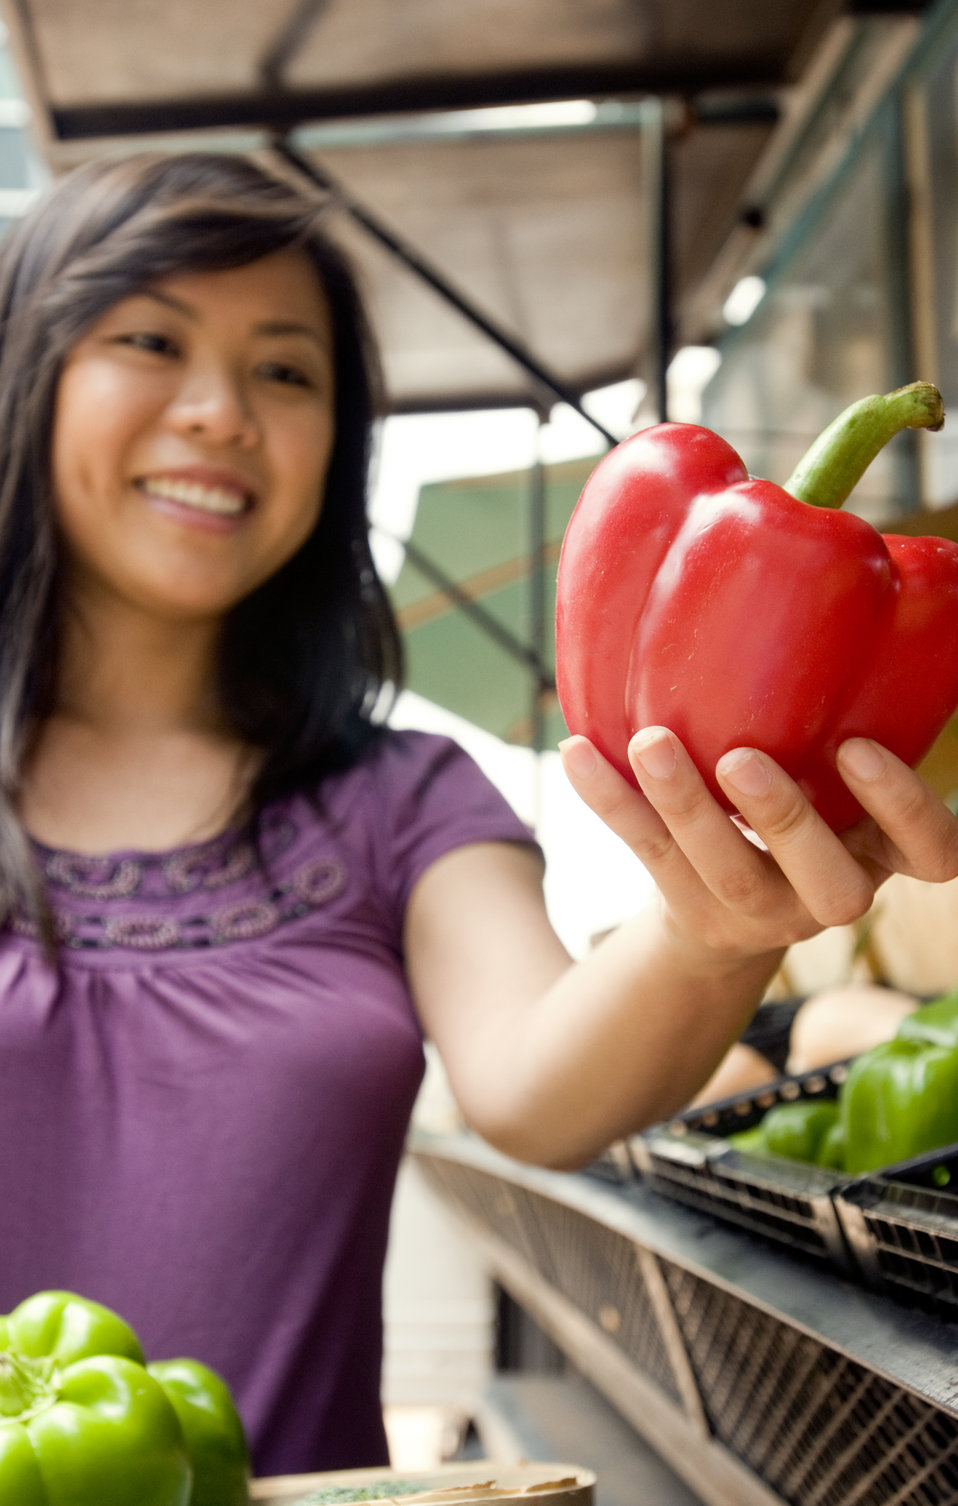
A woman shopping for groceries

This woman was photographed as she was shopping for groceries at a mobile Georgian farmers market at a point in her activity where she was picking out a bright red, ripe bell pepper from a plastic basket container in the market's produce section. Here she appears quite satisfied with her choice, as she holds her find in her left hand before adding it to her woven wooden basket.